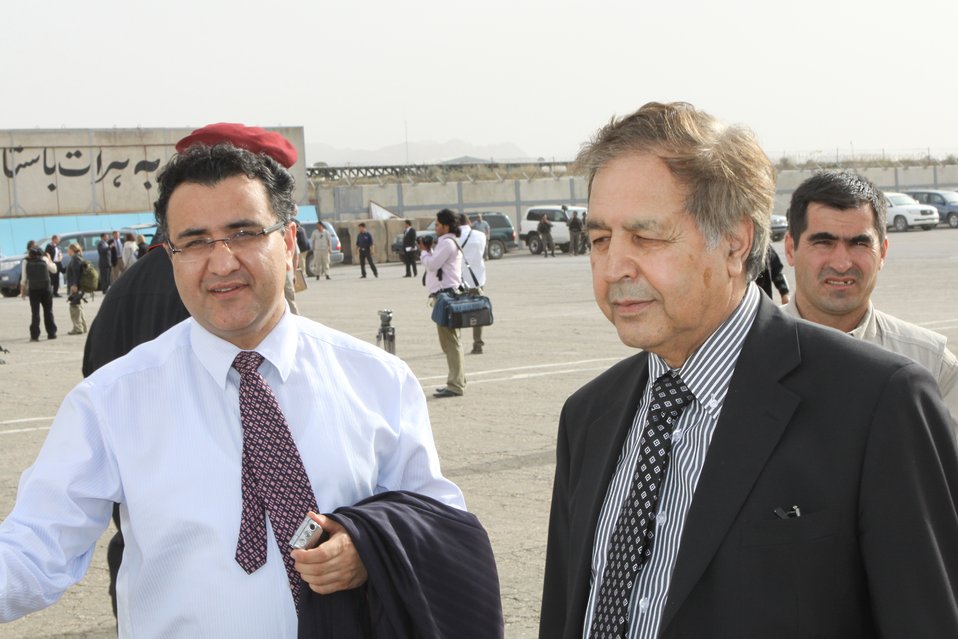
100525 Hirat Marble Conference 894